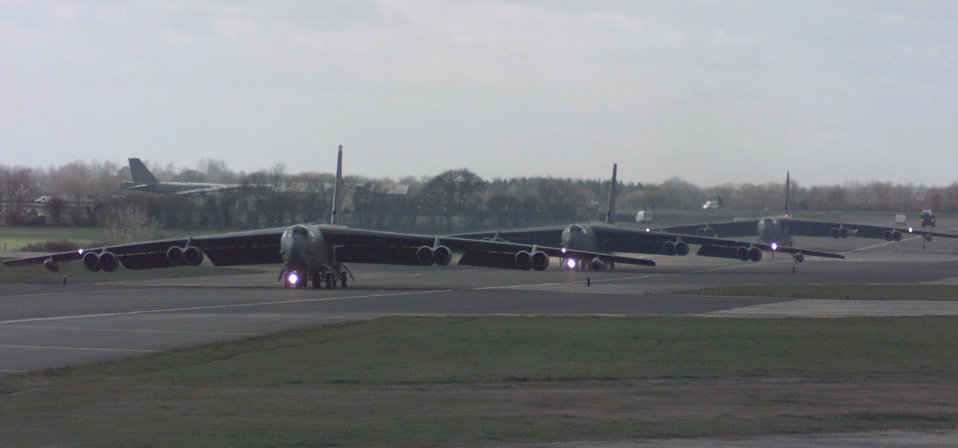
Buff trio

ROYAL AIR FORCE FAIRFORD, England -- Three B-52 Stratofortresses from Barksdale Air Force Base, La., taxi to the runway here. The B-52s are forward deployed to RAF Fairford to support NATO Operation Allied Force. The B-52s have been launching missiles in support of allied NATO air strikes. Air Combat Command's B-52 is a long-range, heavy bomber that can perform a variety of missions.